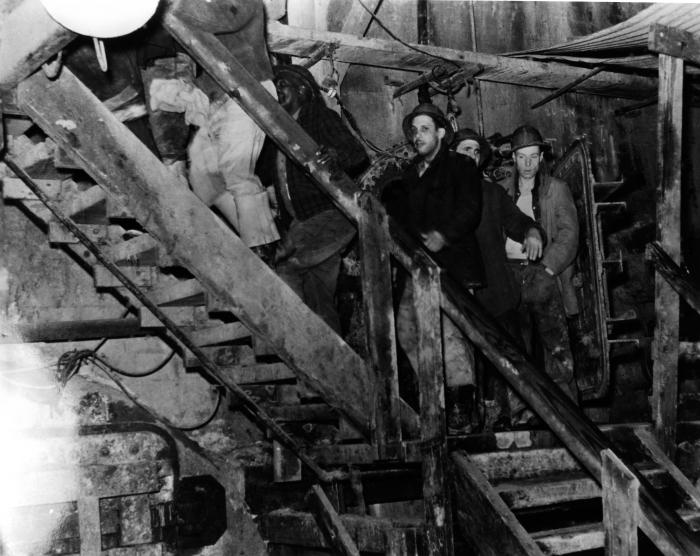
This historical image was provided by the Center for Disease Control's (CDC), National Institute for Occupational Safety and Health (NIOSH). The photograph depicted a subterranean tunnel gang as they were coming off of a work shift, and were in the process of disembarking from the transport cage that had taken them to the surface of the Queens Midtown Tunnel, in Queens, New York. Note that the men were wearing protective hardhats, but not wearing any filtered breathing masks. However, it is not known from this image, as to whether or not the air quality required the use of such a mask. One might assume that this subterranean atmosphere was being monitored, and that safe levels of potentially dangerous particulates and gasses, were required to be maintained.